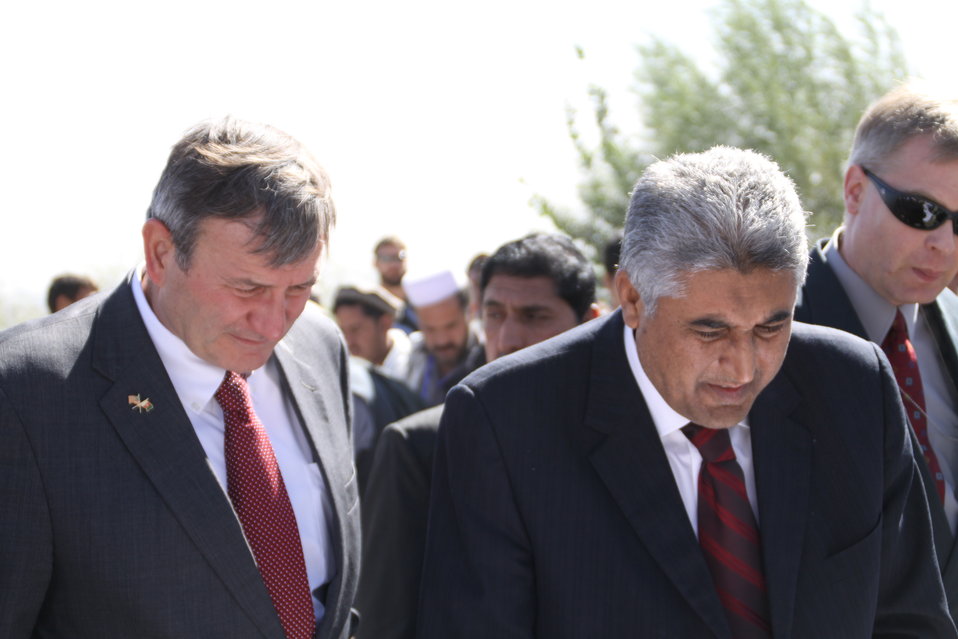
AVIPA Plus Wheat Seed Distribution 101005

US Ambassador Karl Eikenberry and USAID Acting Mission Director Kevin Brownawell joined the Minister of Agriculture, Irrigation and Livestock, H.E. Minister Mohammed Rahimi in signing a Memorandum of Understanding and distributing vouchers to area farmers for wheat and fertilizer.

US Ambassador Karl Eikenberry and USAID Acting Mission Director Kevin Brownawell joined the Minister of Agriculture, Irrigation and Livestock, H.E. Minister Mohammed Rahimi in signing a Memorandum of Understanding and distributing vouchers to area farmers for wheat and fertilizer.